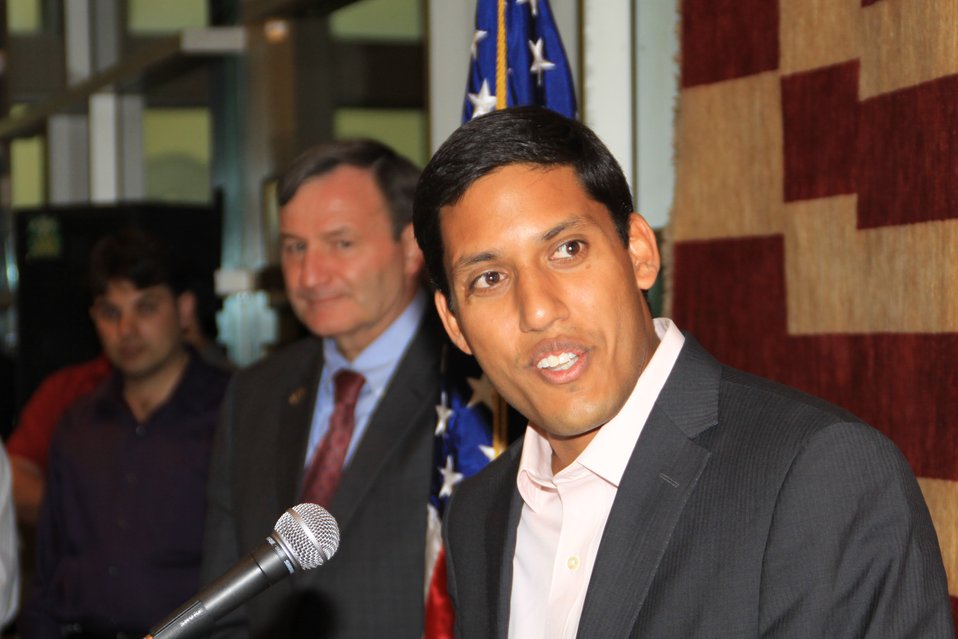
US Embassy Town Hall July 21, 2010